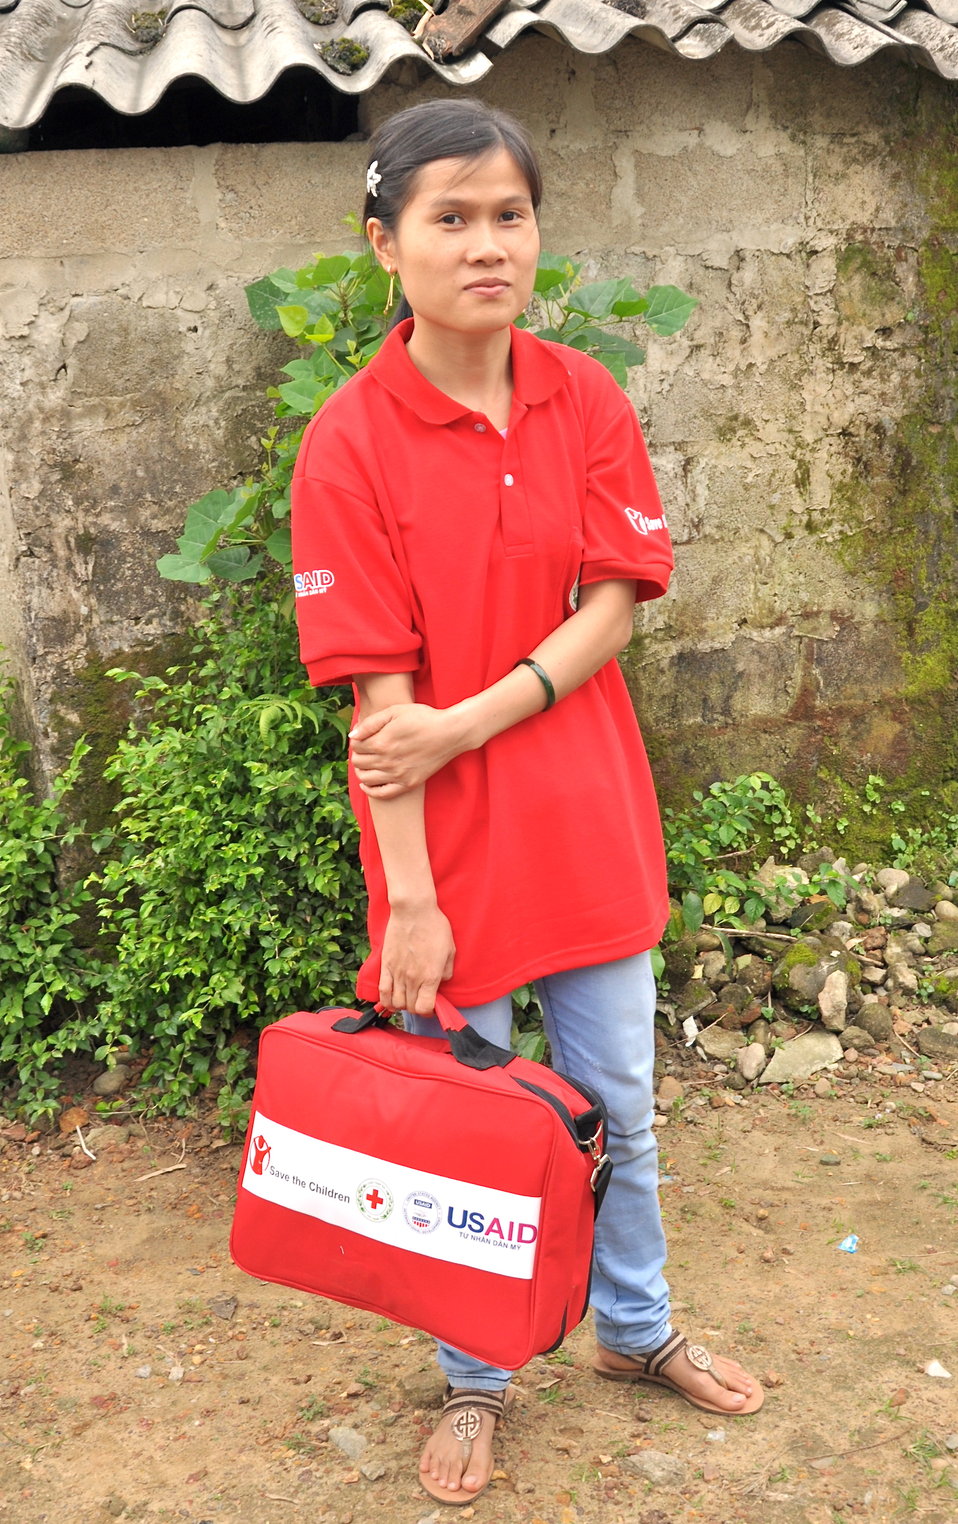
USAID and Save the Children support community evacuation drill and emergency preparedness in central Vietnam

Loc An Commune, Phu Loc District, Thua Thien Hue Province
December 4, 2012, Photo: Richard Nyberg, @USAIDVietnam